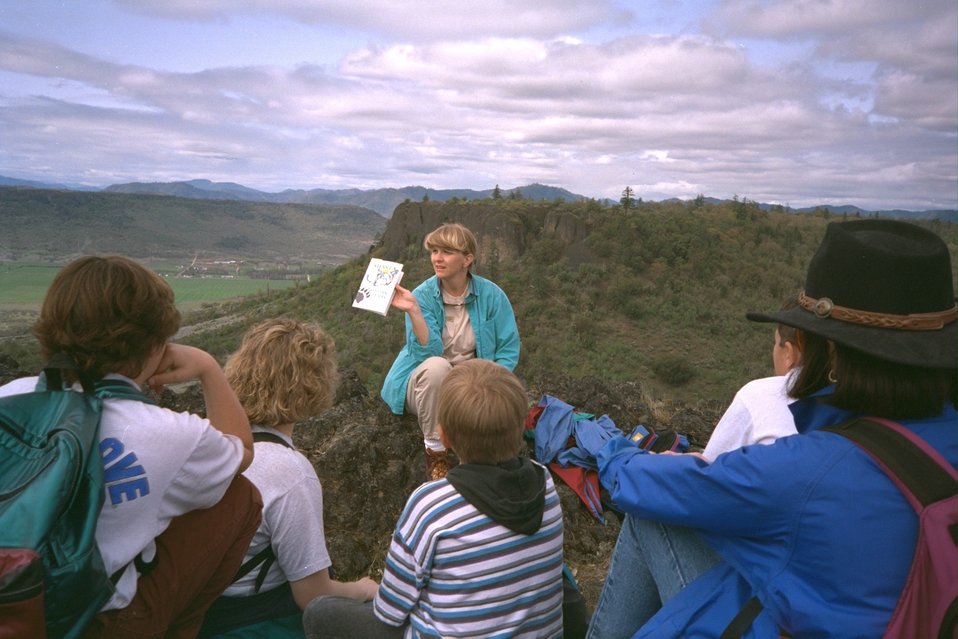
Table Rock hike: Jeanne Klein teaches an elementary school class on the Upper Table Rock.